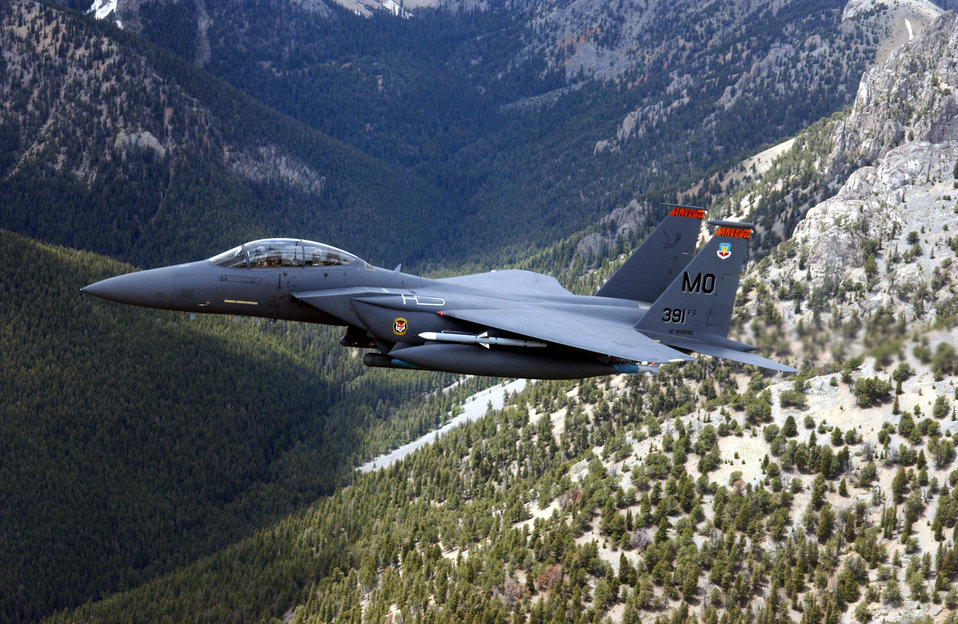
Strike Eagle prowling

MOUNTAIN HOME AIR FORCE BASE, Idaho -- An F-15E Strike Eagle performs a low-level training mission over the Sawtooth Mountain Range. Strike Eagles based here give the 366th Fighter Wing sophisticated air-to-ground attack capabilities and air-to-air superiority.